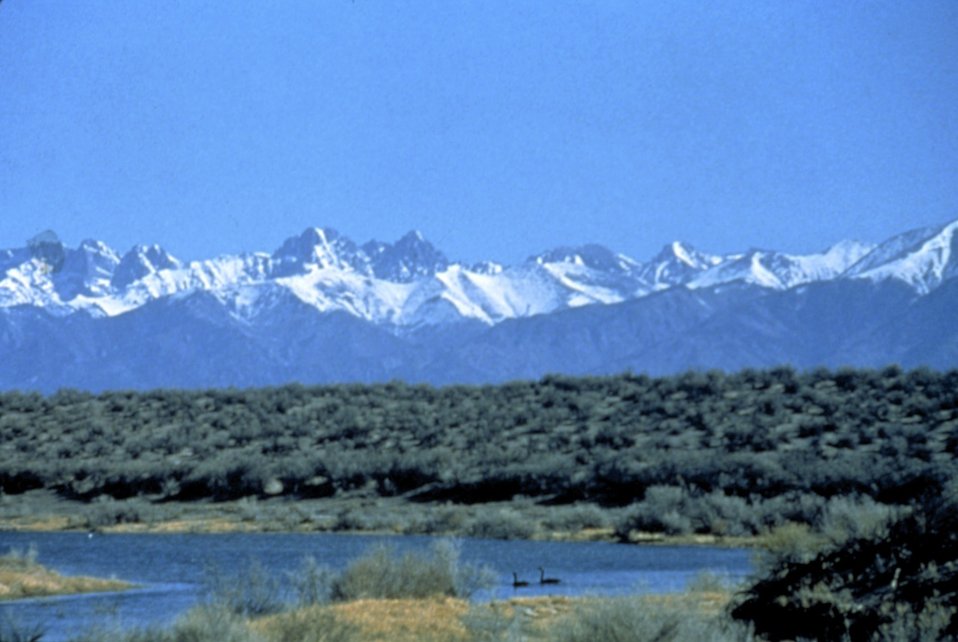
View of the Sangre de Cristo mountain range from Blanca Wetlands.